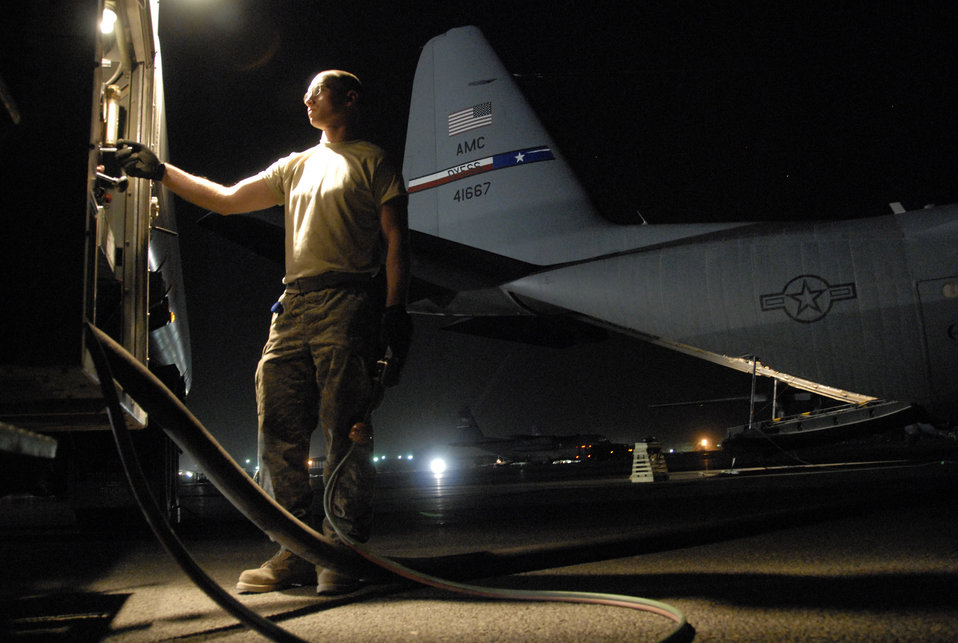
Airmen airdrop messages to Iraqi citizens

Senior Airman Brian Gunther tops off the tanks of a C-130 Hercules with nearly 2,500 gallons of JP-8 fuel. The refuel operation took place recently on an air base in the Southwest Asia prior to the aircraft departing for a mission to drop several hundred thousand leaflets over an Iraqi city. Airman Gunther is assigned to the 386th Expeditionary Logistics Readiness Squadron Fuels Management Flight and deployed from Royal Air Force Lakenheath, England.